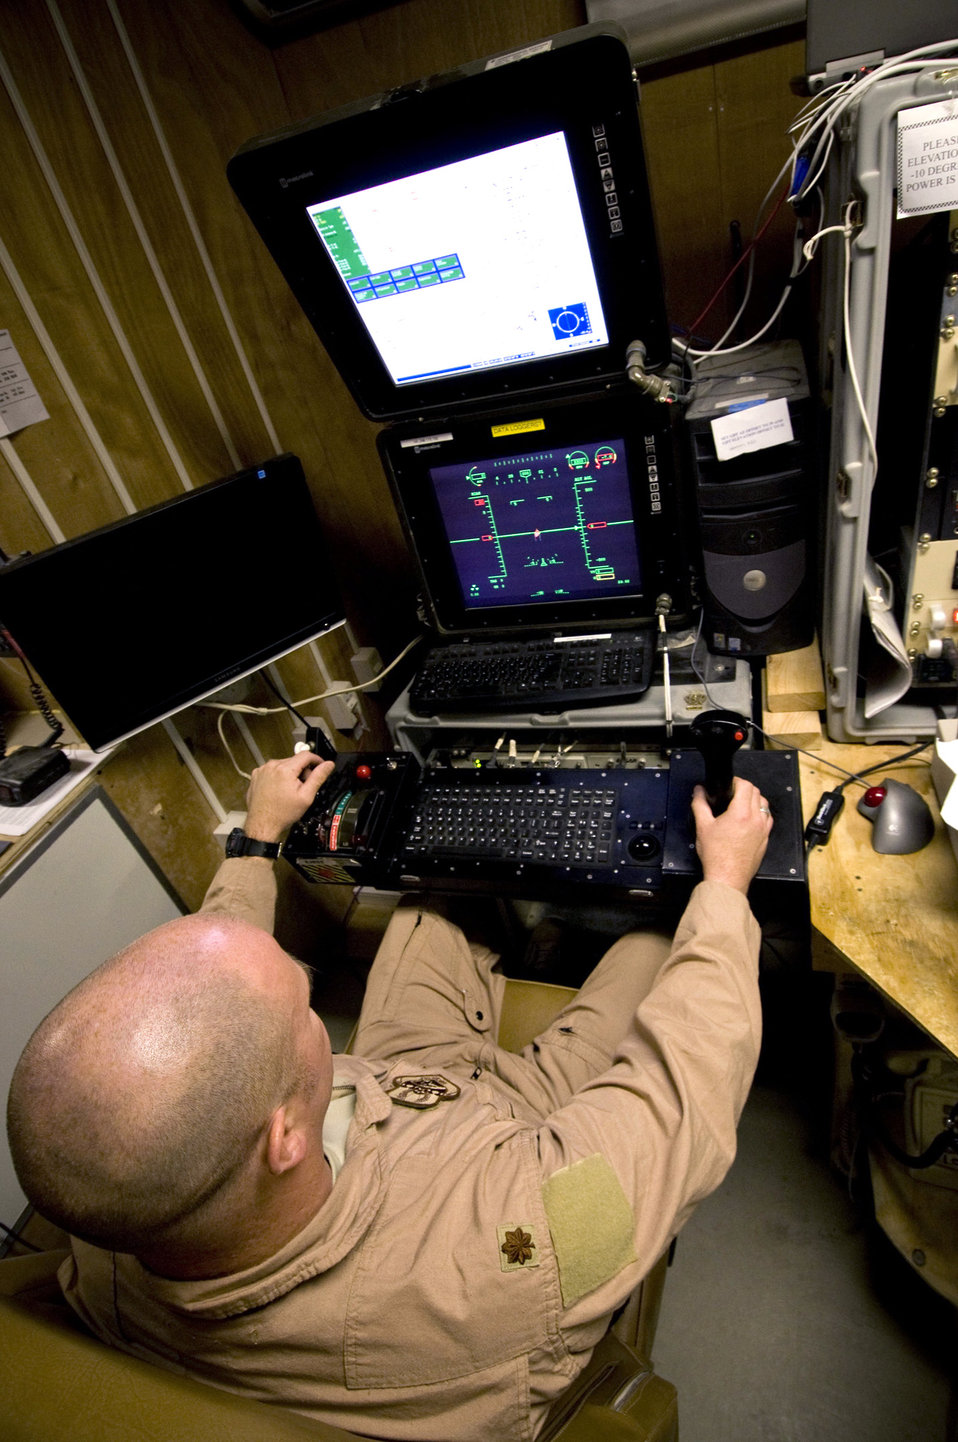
Predators on patrol in Afghanistan

Maj. Rick Wageman operates the virtual cockpit of an MQ-1 Predator Oct. 25 at a base in southern Afghanistan. The remote nature of the control allows the Predator to stay airborne for longer periods of time, changing pilots periodically to reduce stress and fatigue which can lead to mission failure. Major Wageman is a 62nd Expeditionary Reconnaissance Squadron pilot deployed from Cannon Air Force Base, N.M.